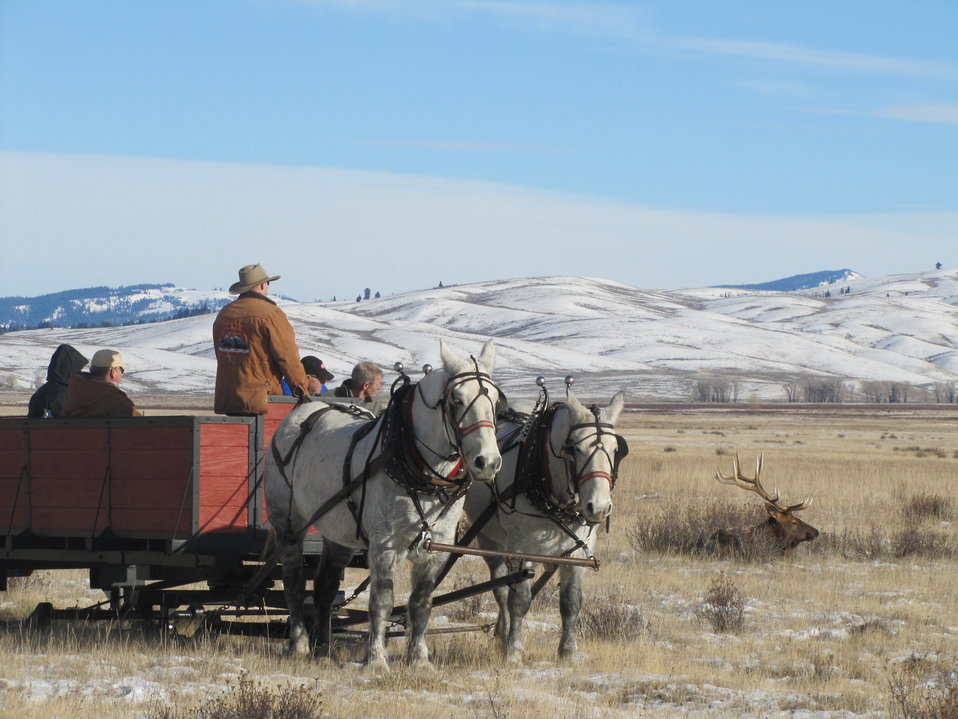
Antler Viewing

A group of wildlife watchers on the National Elk Refuge delight in a close view of a bull's beautifully symmetrical antlers from the comfort of their sleigh.